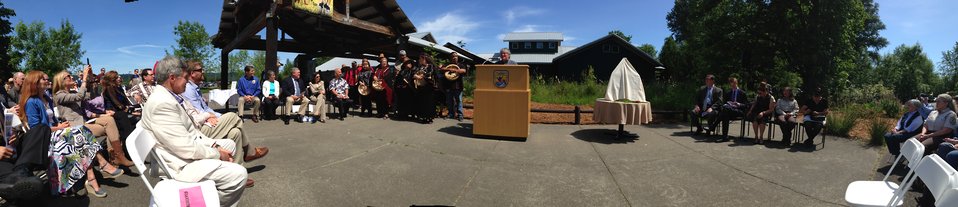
Norm Dicks Visitor Center Ceremony

Secretary of the Interior Sally Jewell joined U.S. Fish and Wildlife Service Director Dan Ashe and tribal and community partners on June 6, 2014, to celebrate the renaming of the visitor center at Nisqually National Wildlife Refuge in honor of former U.S. Congressman Norm Dicks.